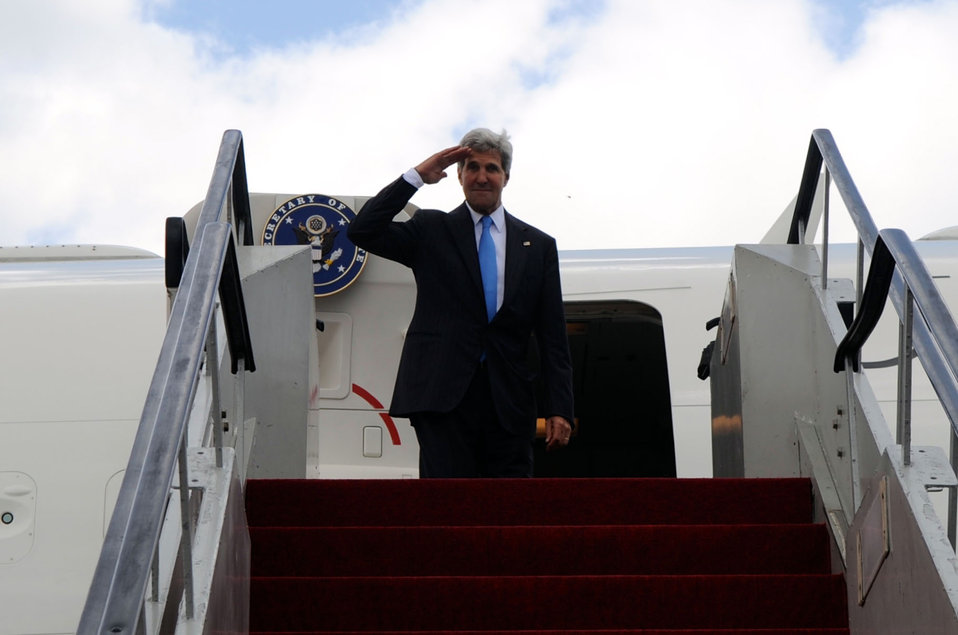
Secretary Kerry Bids Farewell to Indonesia

U.S. Secretary of State John Kerry snaps off a salute as he bids farewell to Bali, Indonesia, on October 9, 2013, following his attendance at APEC Ministerial and Leader meetings.